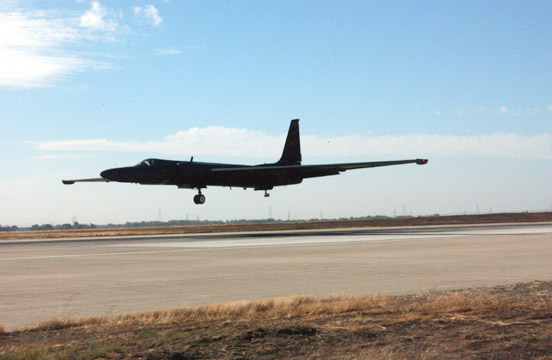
Rita reconnaissance returns

BEALE AIR FORCE BASE, Calif. -- A U-2 aircraft takes off from here to collect images over the Gulf Coast region Sept. 22. Federal Emergency Management Agency officials asked the 9th Reconnaissance Wing to take images over Louisiana and Texas to assess before Hurricane Rita hit the area. The wing's Airmen are standing by to conduct additional post-hurricane missions to help assess the damage and assist emergency responders.